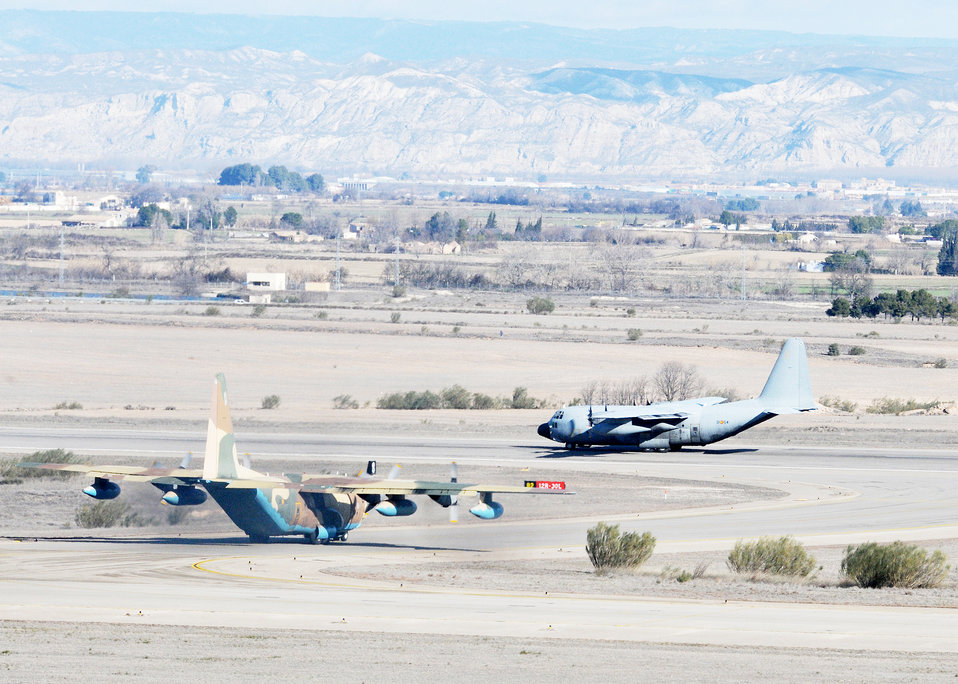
Airmen train in Spain

An Air Force C-130 and a Spanish air force C-17 prepare for takeoff Feb. 1, 2010, from Zaragoza Air Base, Spain. U.S. and Spanish air forces shared a runway and airspace during the 555th Fighter Squadron?s 2010 training deployment to Spain.